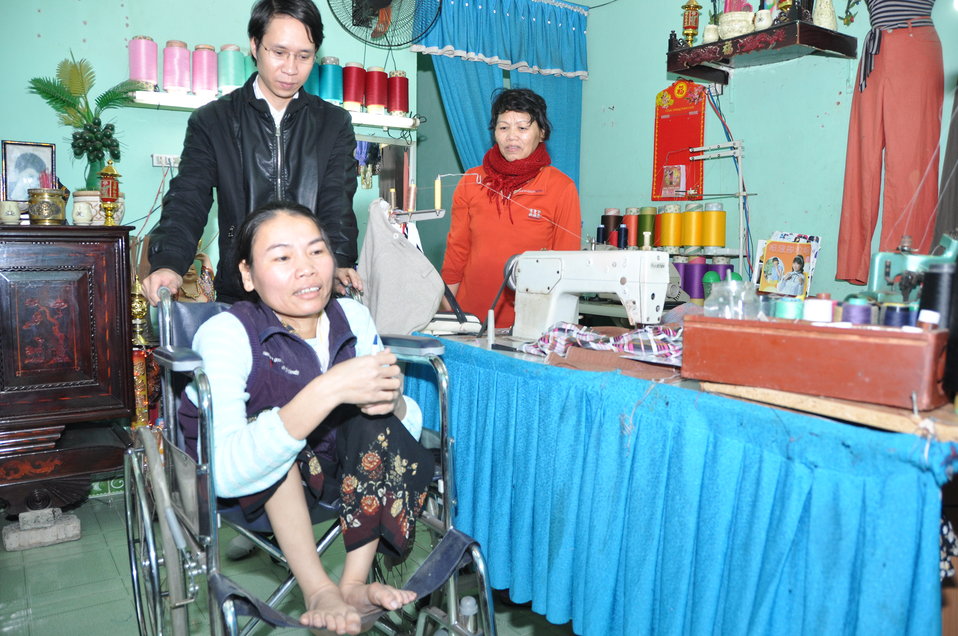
Le Thi Het receives support to boost her income from sewing.

Ms. Le Thi Het received a USAID funded wheelchair and regular physical therapy services as part of a three-year project in Danang.